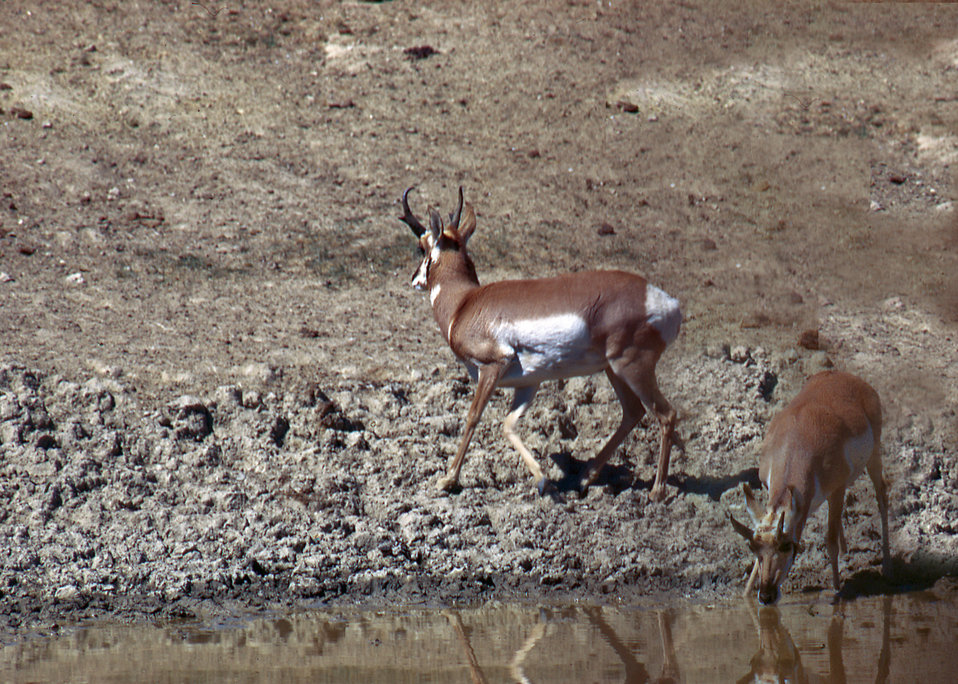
Antelope in a Wildlife Conservation area in Arizona